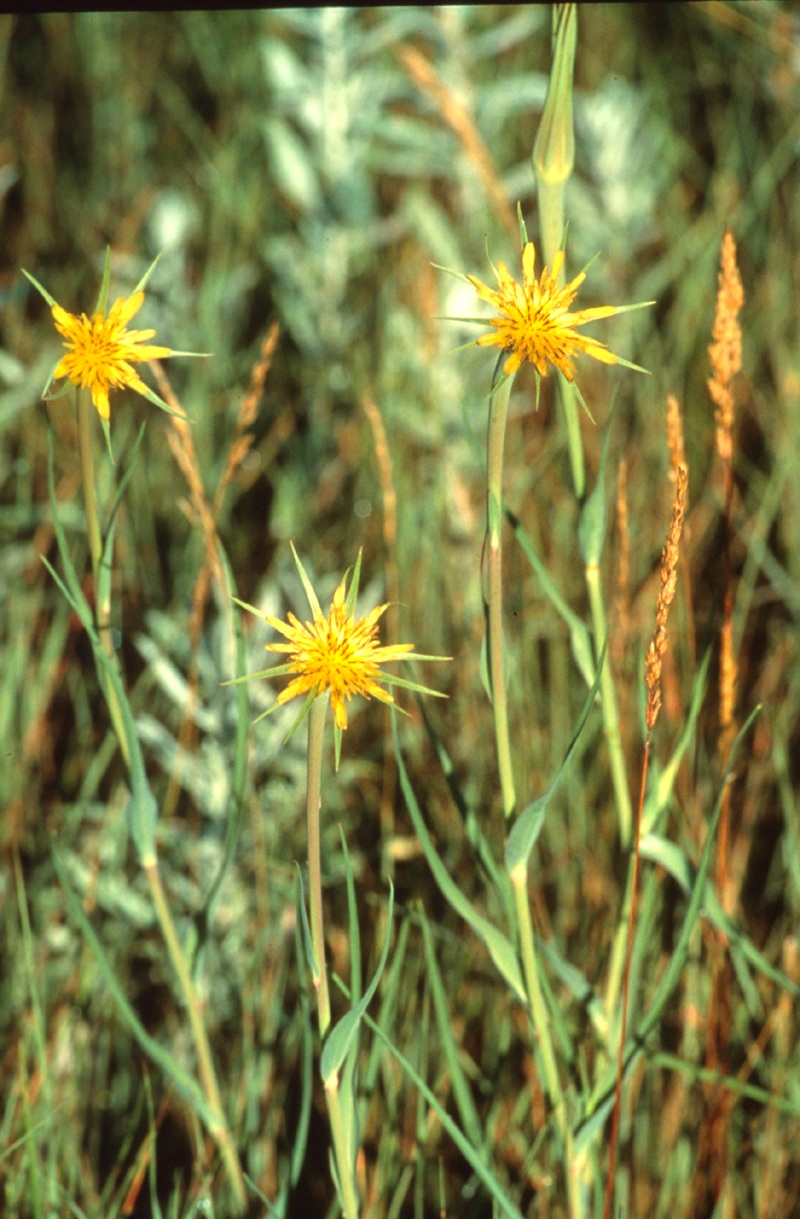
South Fork of the Snake River